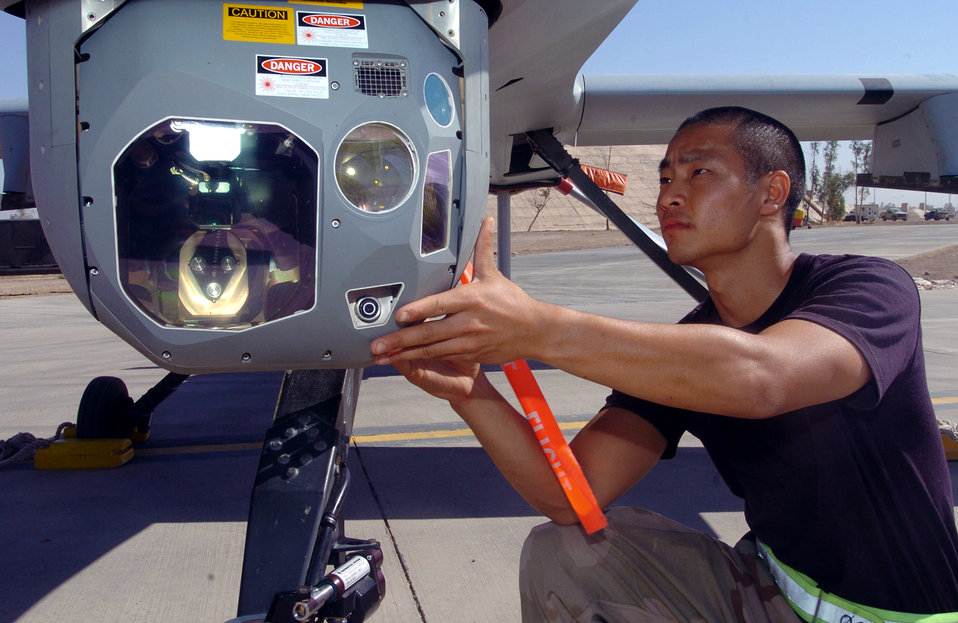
Camera ready

BALAD AIR BASE, Iraq -- Airman 1st Class Chris Korenaga checks the camera system of an RQ-1 Predator unmanned aerial vehicle. The Predator conducts aerial reconnaissance and patrols around the base's perimeter. Airman Korenaga is a crew chief with the 46th Expeditionary Aerial Reconnaissance Squadron and deployed from the 757th Aircraft Maintenance Squadron at Nellis Air Force Base, Nev.